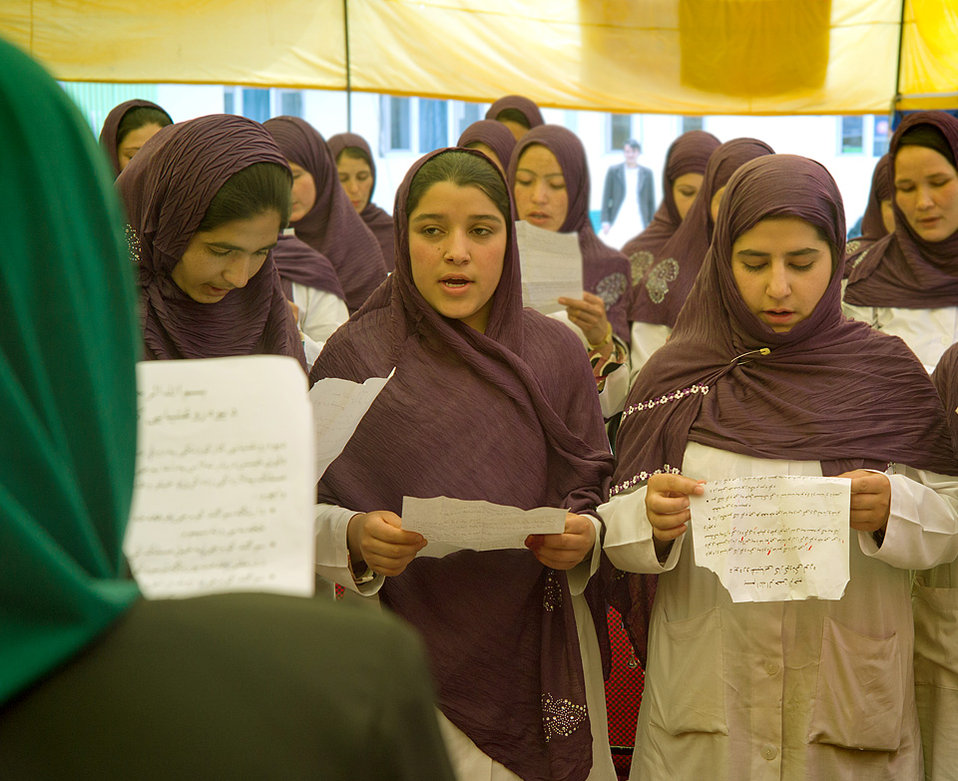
Taking the Midwife's Oath 1